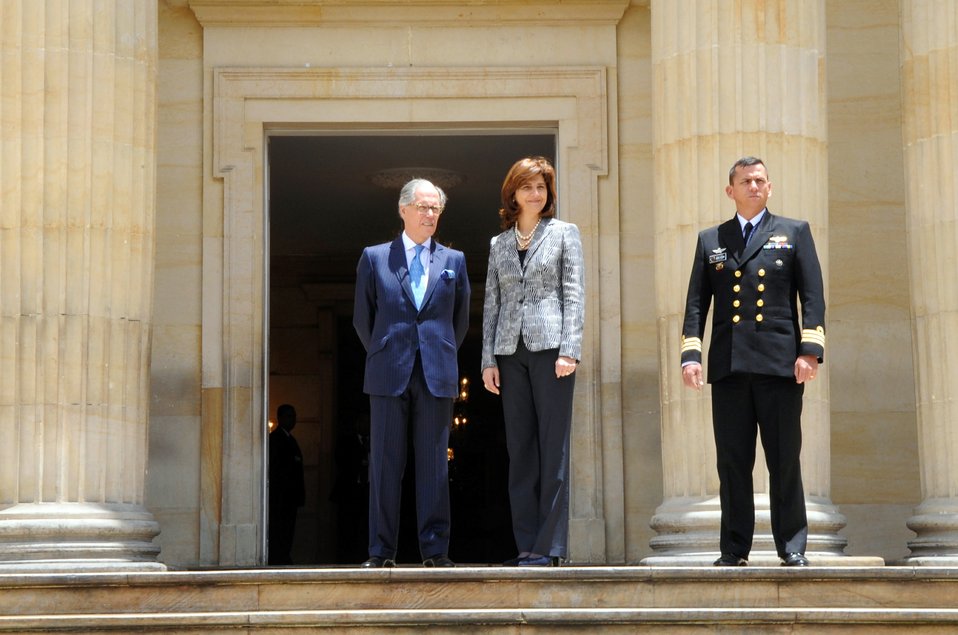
Colombian Foreign Minister Holguin Awaits Secretary Kerry

Colombian Foreign Minister Maria Angela Holguin, Colombian Ambassador to the U.S. Carlos Urrutia, and a military officer await U.S. Secretary of State John Kerry as he arrives for a meeting with Colombian President Juan Manuel Santos at Casa de Narino in Bogota, Colombia, on August 12, 2013.